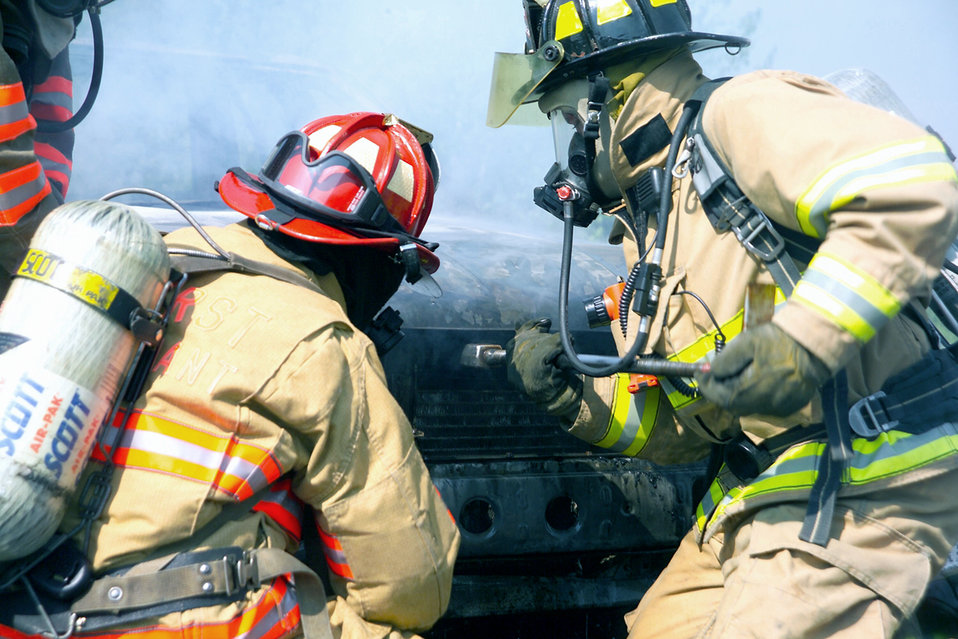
Granite Thunder 2004

NEW BOSTON AIR FORCE STATION, N.H. -- Firefighters from nearby Bedford and New Boston extinguish a car fire here during Granite Thunder 2004. The exercise encompassed more than 20 local, state and federal agencies responding to a simulated terrorist attack that combined explosives with chemical agents.